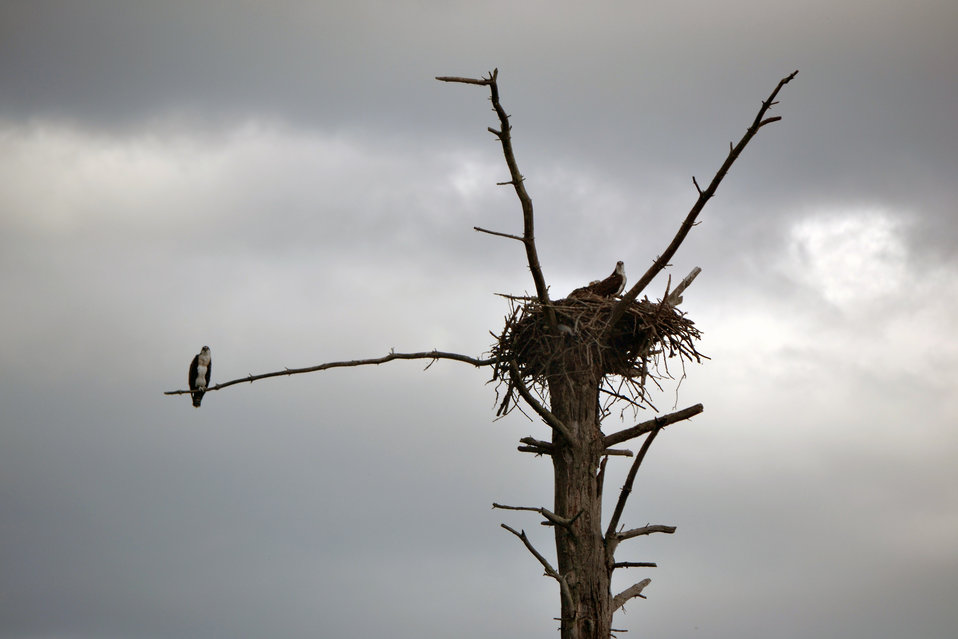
Osprey at Tamarac National Wildlife Refuge.